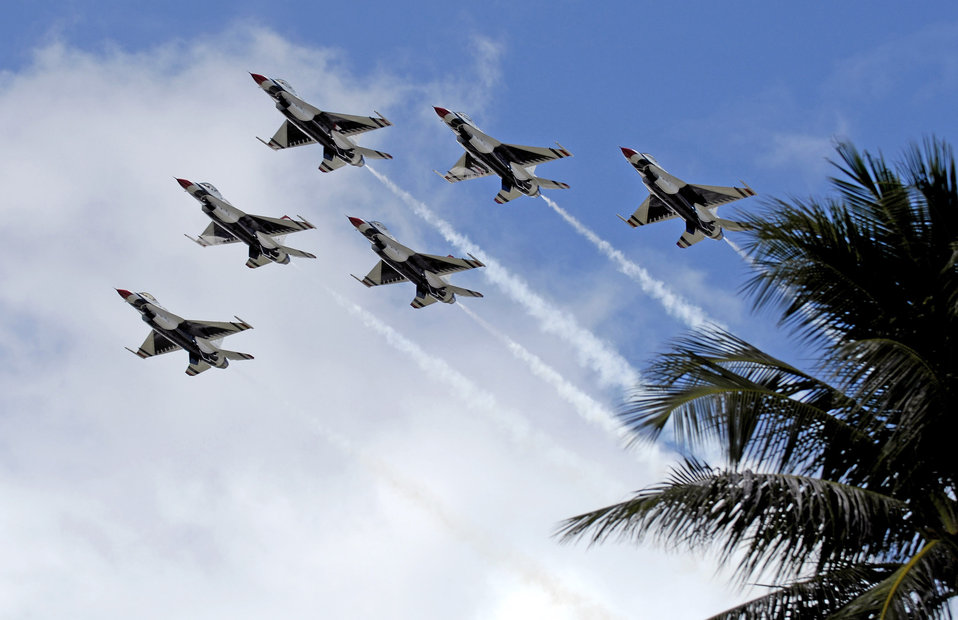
Thunderbirds fly above island paradise

The Air Force Thunderbirds demonstration team begin their aerial demonstration practice Sept. 13 in Waikiki, Hawaii. The Thunderbirds performed the practice session to prepare for their show Sept. 15 as part of Air Force Week Honolulu.